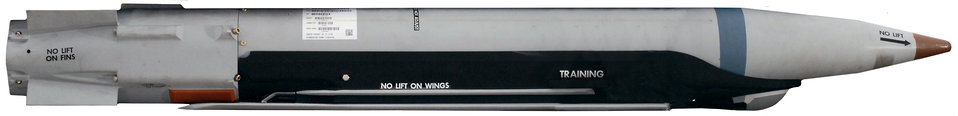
Small-diameter bomb makes Strike Eagle squadron more lethal

This ground training Guided Bomb Unit-39 small-diameter bomb is in a stowed configuration at Royal Air Force Lakenheath, England, on Aug. 1. When released, the ground training bomb rotates and deploys diamond-backed wings. Despite its small size, the 250-pound bomb can penetrate several feet of reinforced concrete.